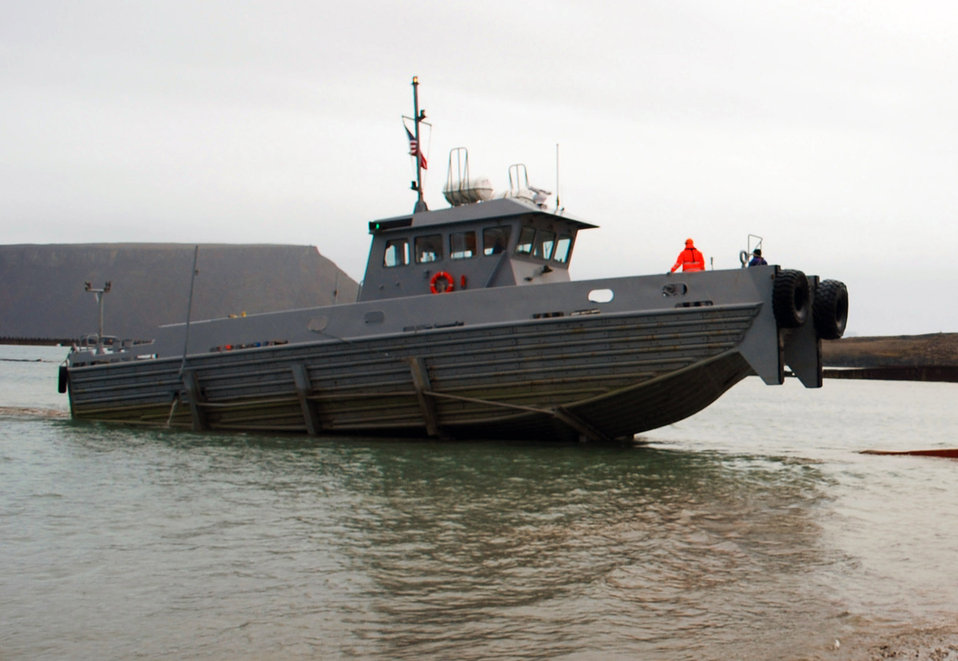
Good-bye, Pacer Goose

The Air Force's only tug boat was pulled from the waters of Greenland's Baffin Bay Aug. 11 marking the end of Operation Pacer Goose. The ice tug cleared the way for ships delivering 1.6 million pounds of cargo and 15 million gallons of fuel this year to Thule Air Base, Greenland.